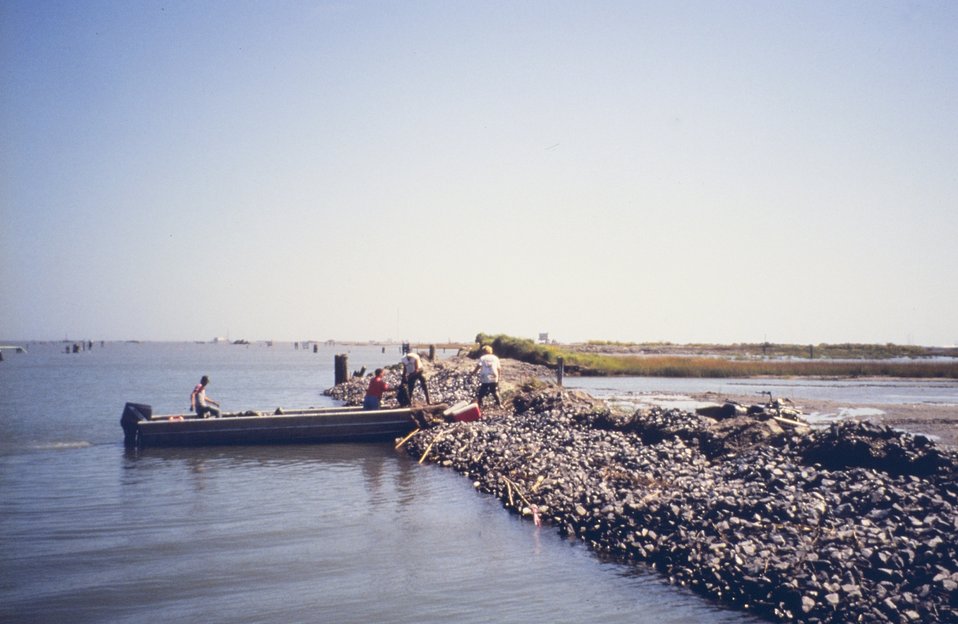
A site visit to monitor at the berm on the backside of the marsh platform after construction of the platform but prior to planting.